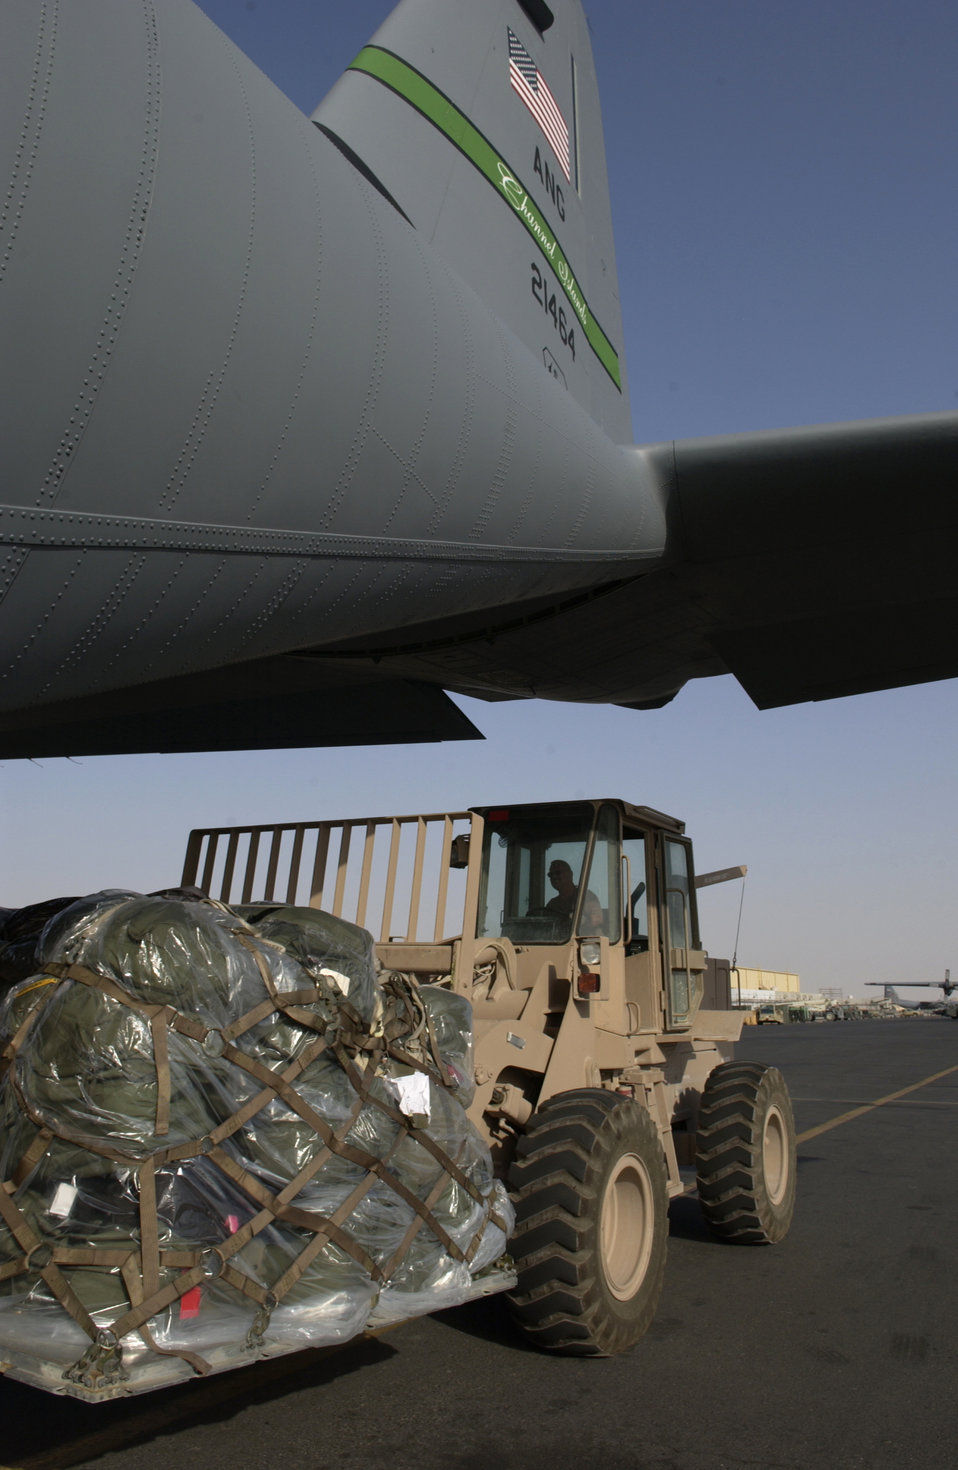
Latest C-130J evolution arrives on desert ramp

SOUTHWEST ASIA -- An aerial port Airman removes cargo from a stretch version C-130J Hercules at a forward-deployed location here June 7. The plane is from the California Air National Guard's 146th Airlift Squadron and is supporting missions in Iraq, Afghanistan and the Horn of Africa. The J-model is the latest upgrade to the C-130 cargo plane series.